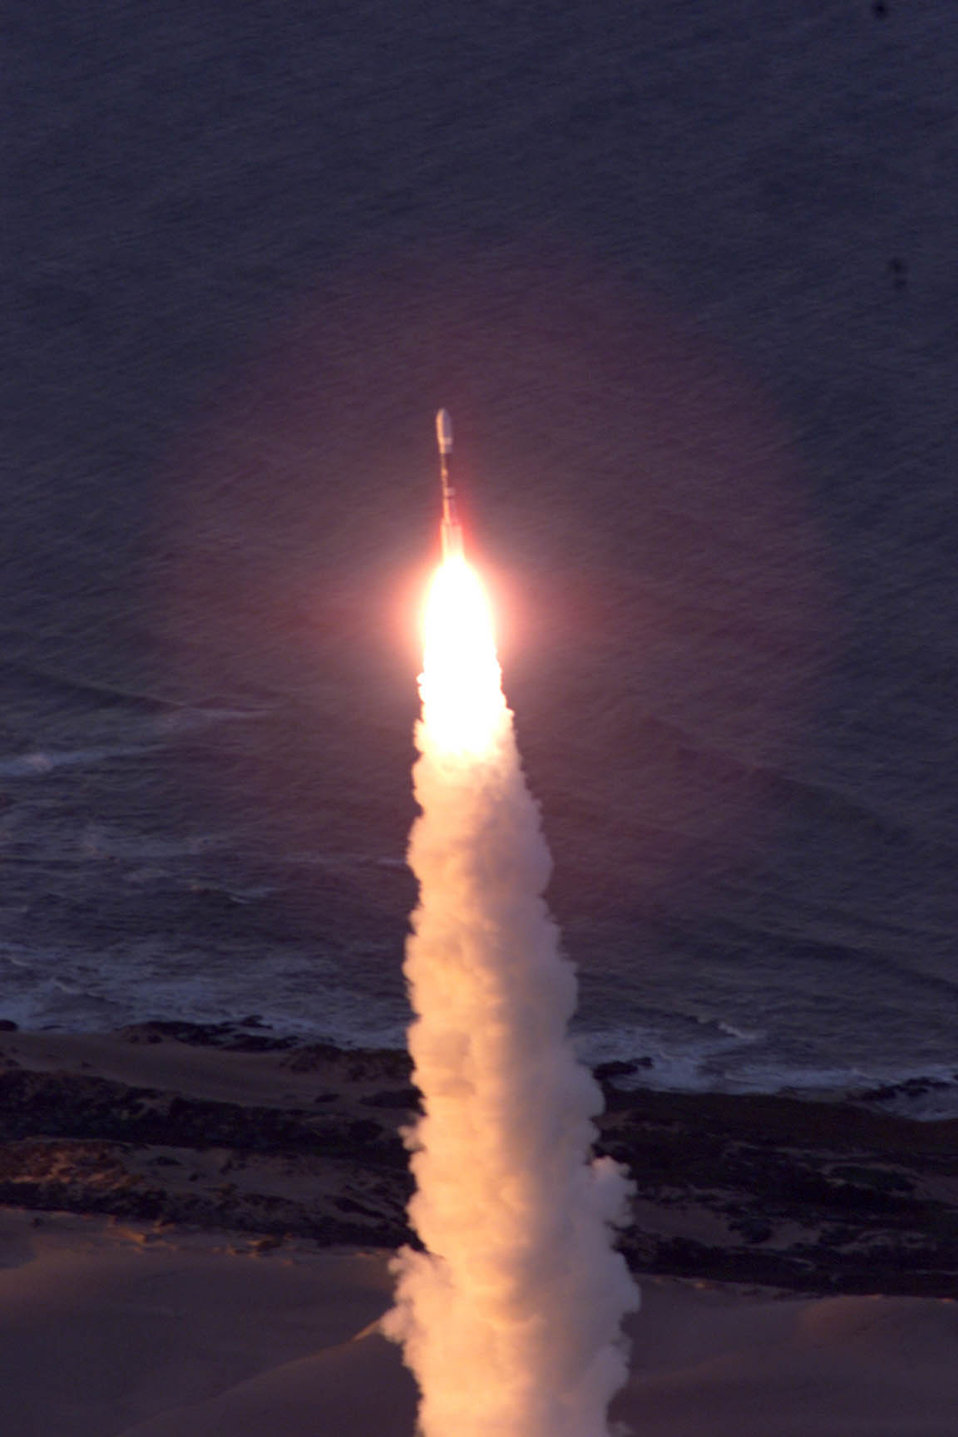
Delta II rocket

VANDENBERG AIR FORCE BASE, Calif. -- The Air Force successfully launched a Boeing Delta II rocket carrying the Jason 1 and Timed satellites from Space Launch Complex-2 on Dec. 7. This was the second Delta II launched from Vandenberg this year. Jason 1 is a joint U.S./French oceanography mission. Jason 1 will monitor world ocean circulation, study interactions of the oceans and atmosphere, improve climate predictions and observe events such as El Nino. The NASA timed spacecraft will conduct the first global study of the Earth's mesosphere, lower thermosphere and ionosphere. The project is managed by the Jet Propulsion Laboratory in Pasadena, Calif., for NASA and the French space agency.